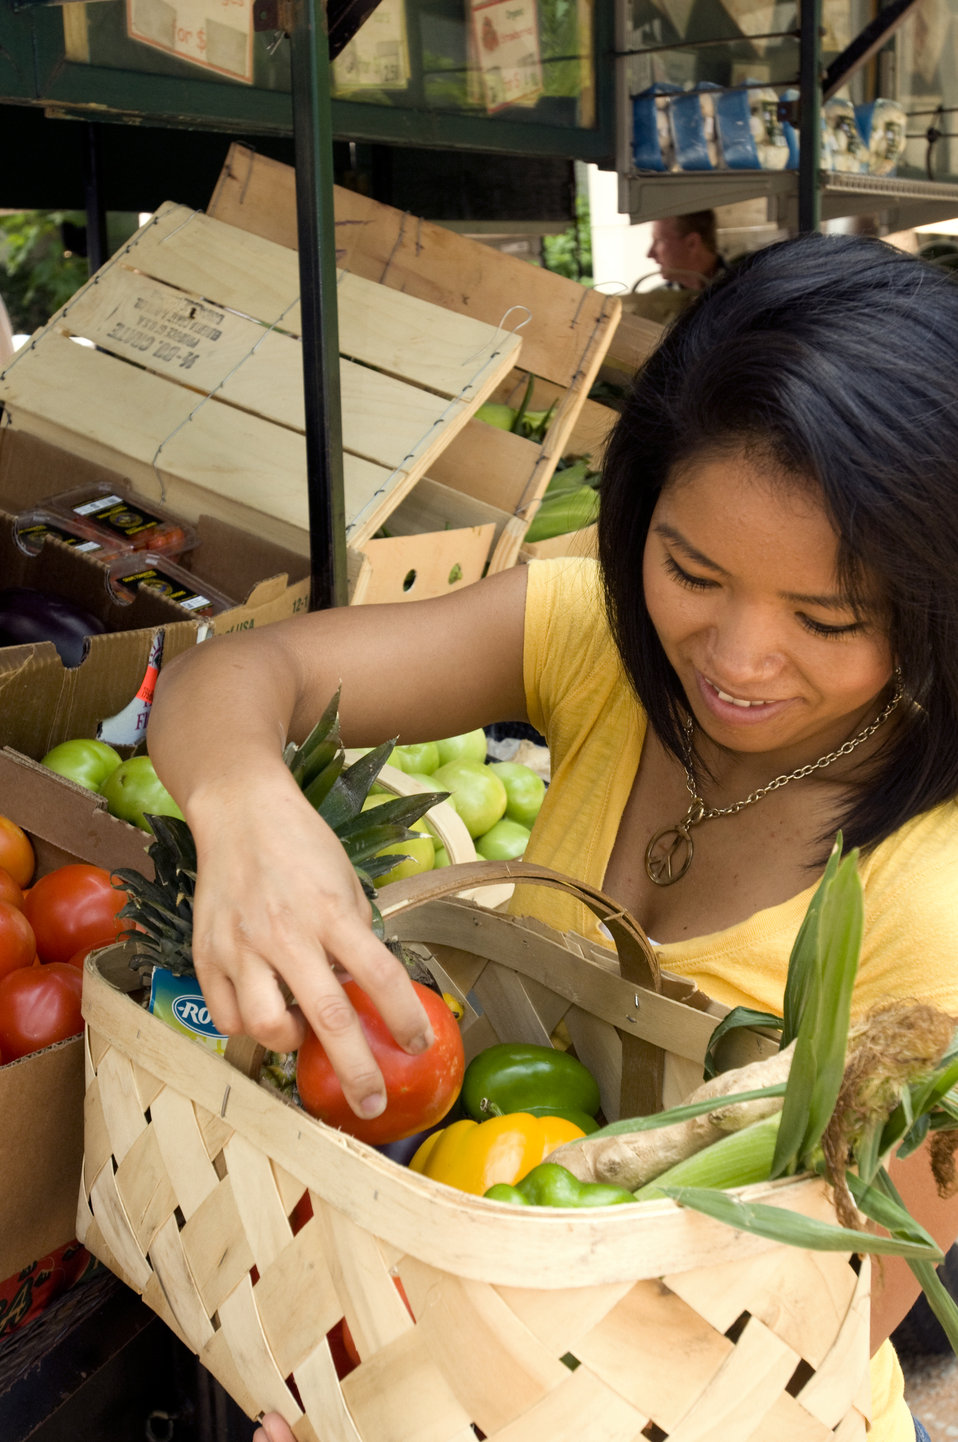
This photograph depicts a woman shopping at a mobile produce market, making healthy food choices from an array of fresh fruits and vegetables. After having made her choices, she had placed her selections into a woven wooden basket, to which she can be seen adding a red ripe tomato. Note some of the foods that were available at this mobile produce facility in the background.